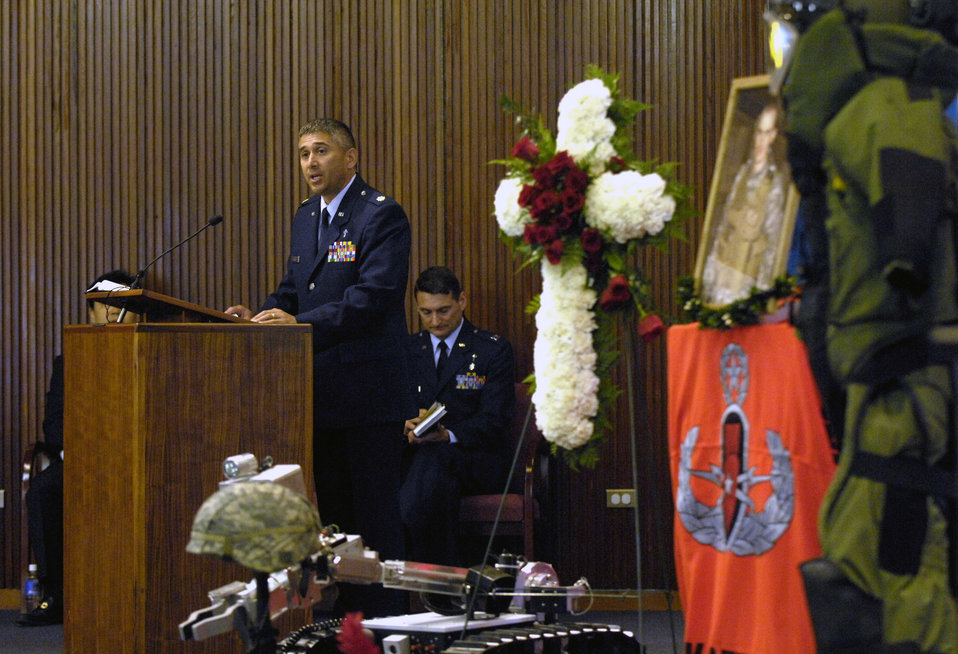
Solemn service

Chaplain (Maj.) Dave DePinho reads the scripture during a memorial service honoring Senior Airman William Newman at the base chapel June 13 at Hickam Air Force Base, Hawaii. Airman Newman, an explosive ordnance disposal technician assigned to the 15th Civil Engineer Squadron, was killed June 7 by an improvised explosive device, which detonated while he was supporting Army and Iraqi security forces near Mishna, Iraq. Chaplain DePinho is with the 15th Airlift Wing.